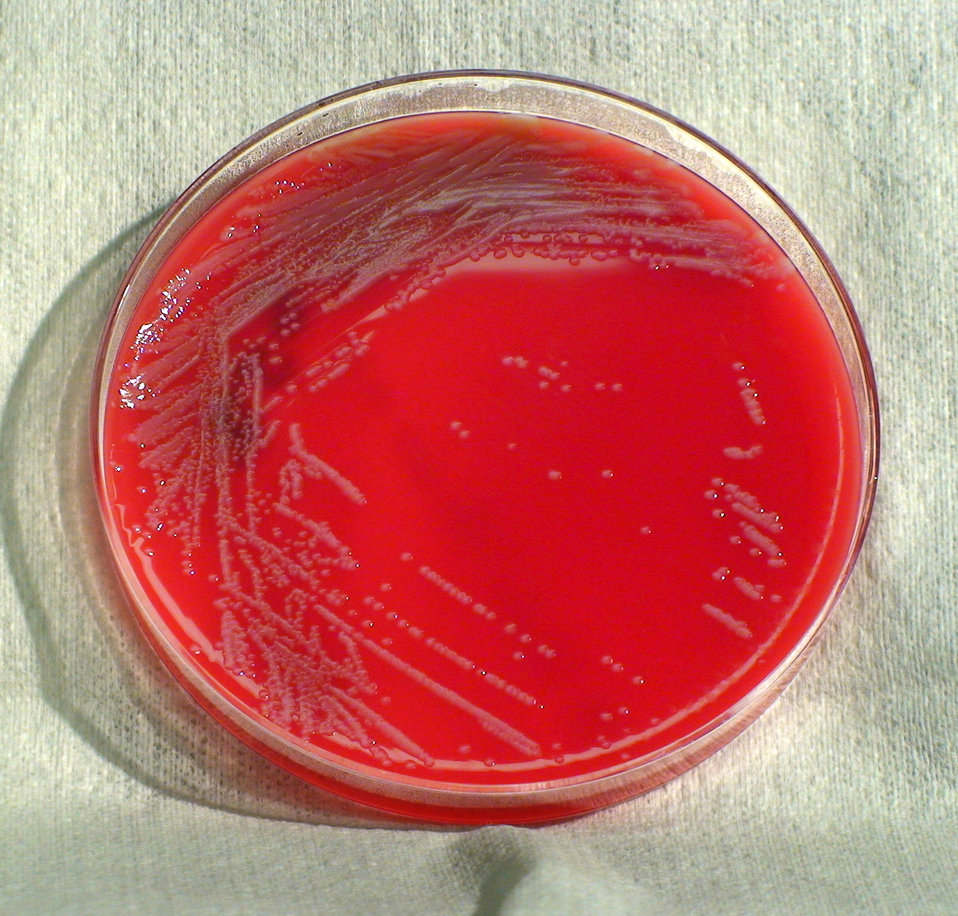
This photograph depicts a the colonial morphology displayed by Gram-positive Bacillus simplex bacteria, which was grown on a medium of sheep's blood agar (SBA), for a 24 hour time period, at a temperature of 37�C. See PHIL 12486, for another closer view of this culture plate, and these bacterial colonies.